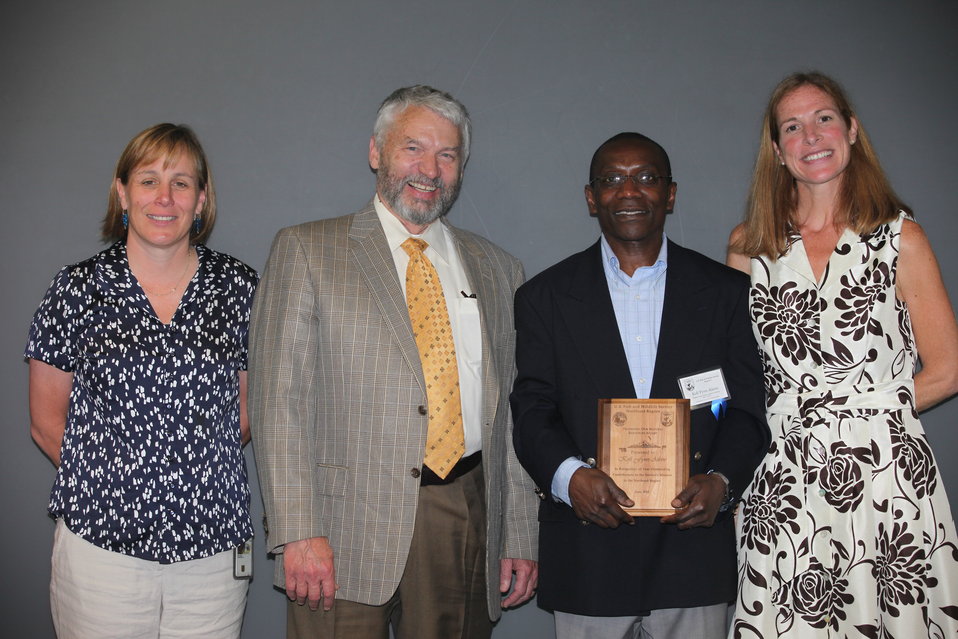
Kofi Fynn-Aikins of the Lower Great Lakes Fish and Wildlife Conservation Office was awarded the Promoting Our Natural Resources Award.
From left to right: Deputy Regional Director Deb Rocque, Deputy Director Rowan Gould, Kofi Fynn-Aikins, and Regional Director Wendi Weber